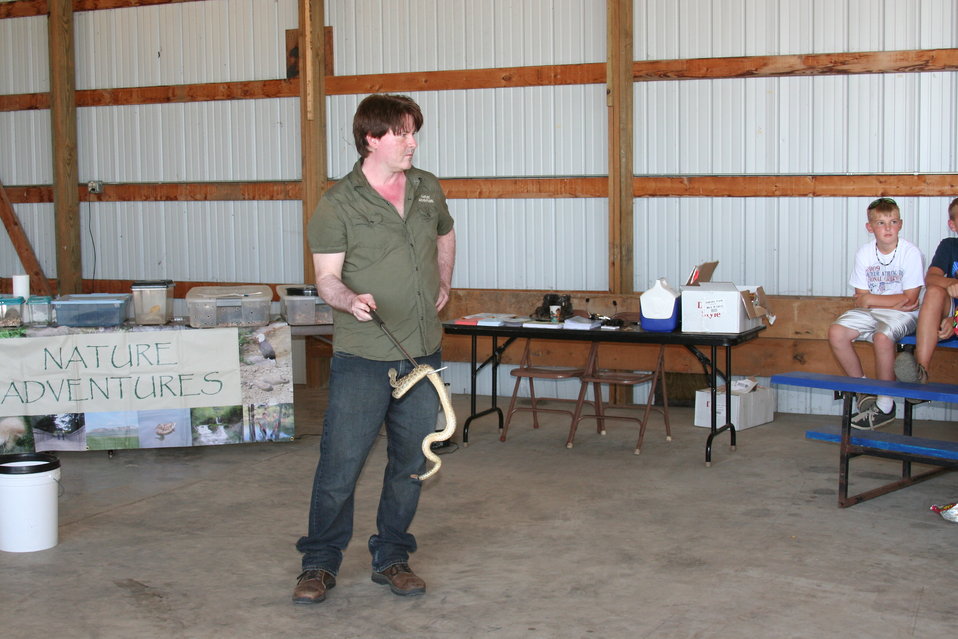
2011 Huron Prairie Fest

Nature Adventures star, Todd, displays a rattlesnake.